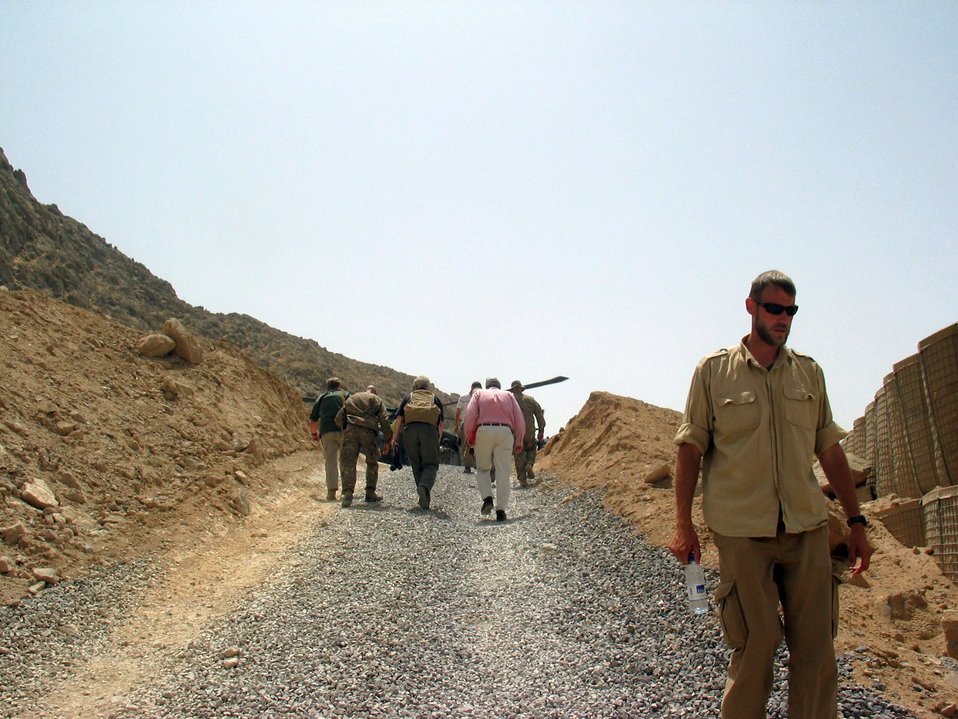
CODEL Berman